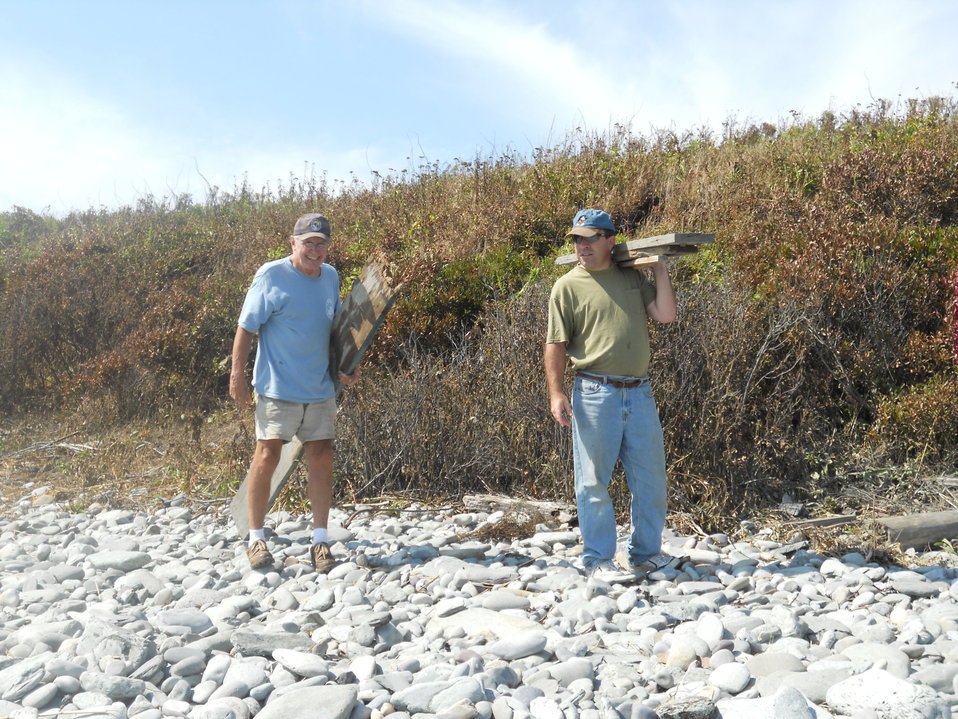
Cleaning up After Irene

Volunteers have pitched in to help clean up debris on national wildlife refuges in Rhode Island after Hurricane Irene. Janis Nepshinsky/USFWS photos.